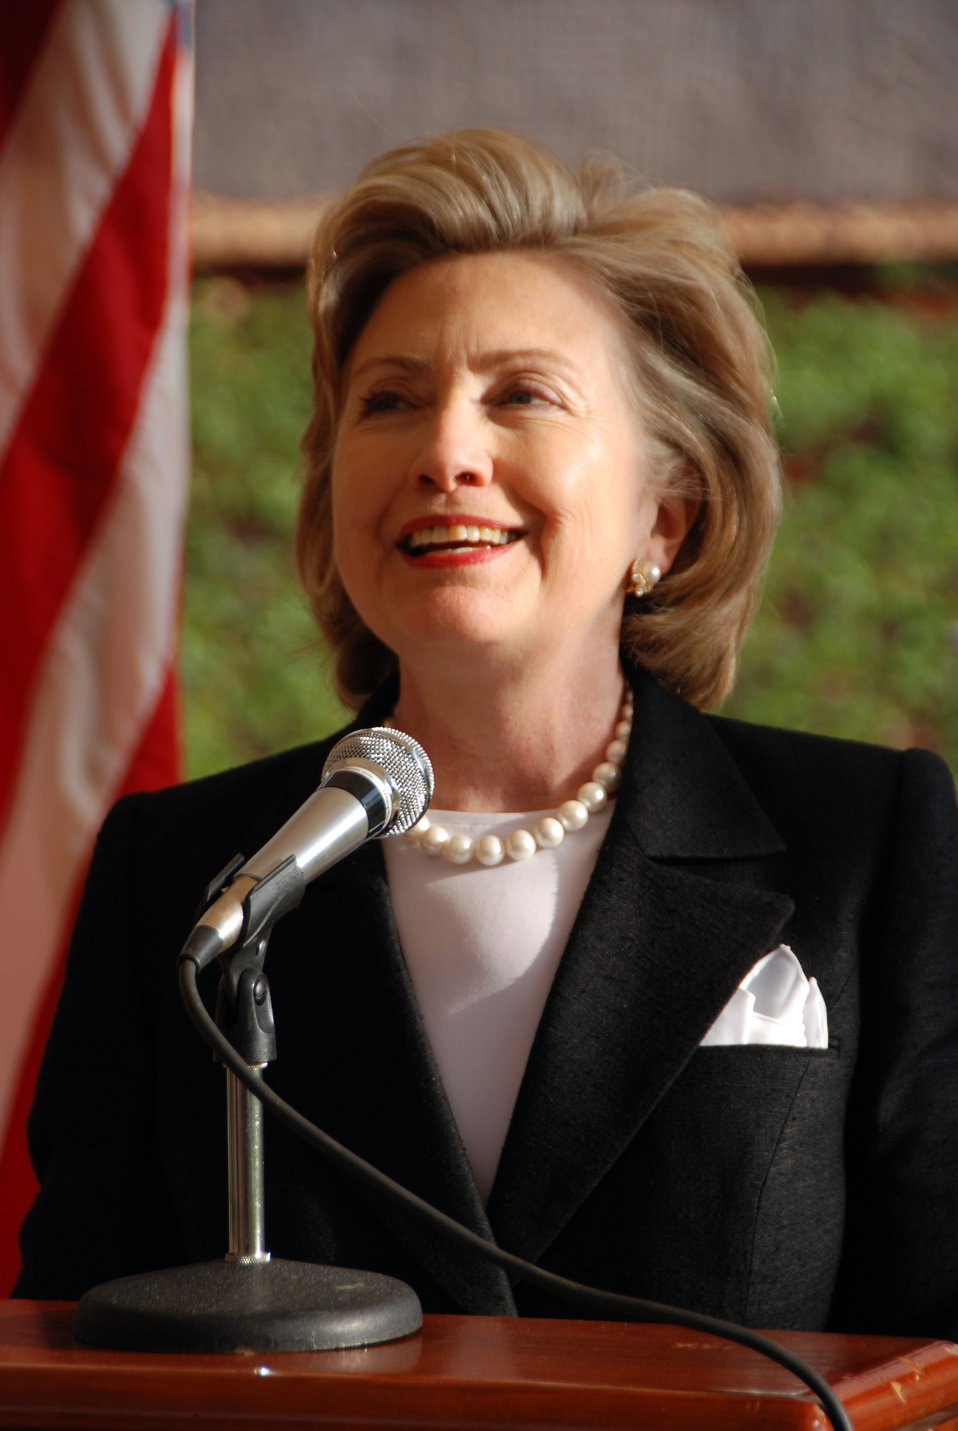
Secretary Clinton Addresses U.S. Embassy Staff in Kenya

U.S. Secretary of State Hillary Rodham Clinton addresses U.S. Embassy employees in Nairobi, Kenya August 6, 2009.